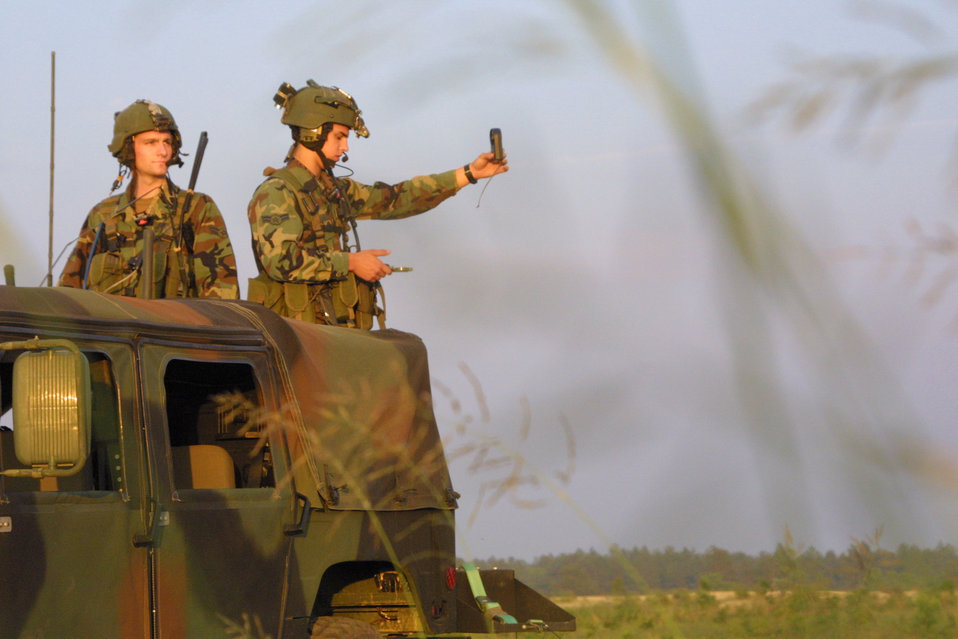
Putting 'air' in airborne

FORT BRAGG, N.C. -- Combat controllers from nearby Pope Air Force Base control air operations during an Air Force and Army Large Package Week exercise here May 10 to 14.